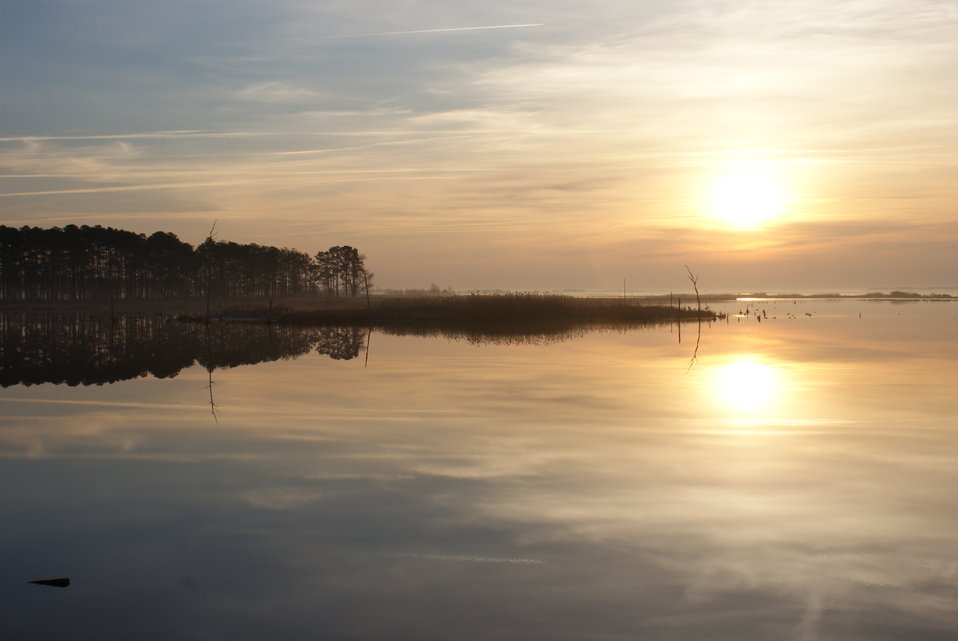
Photo of the Week - Blackwater River (MD)

Photo of the week - 7/15/13

Sunset over Blackwater River photographed from the wildlife drive at Blackwater National Wildlife Refuge.